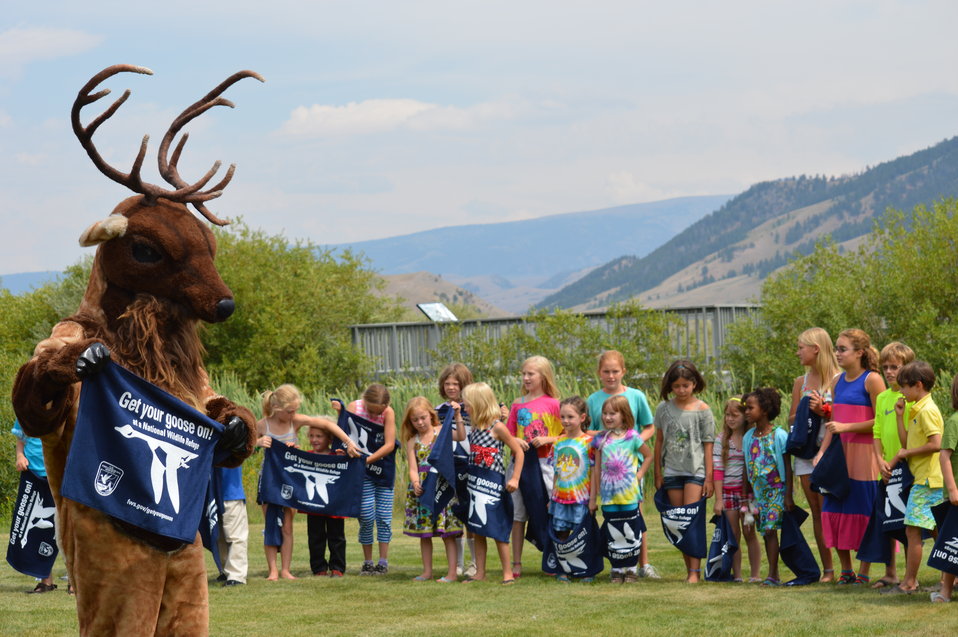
Get Your Goose On! - National Elk Refuge Style

On August 10, 2012 the U.S. Fish and Wildlife Service and Partners celebrated the 100 year anniversary of the establishment of the National Elk Refuge. In these photos, young attendees, along with Puddles the Blue Goose and the National Elk Refuge's mascot, showed us how to Get Your Goose On! with style.